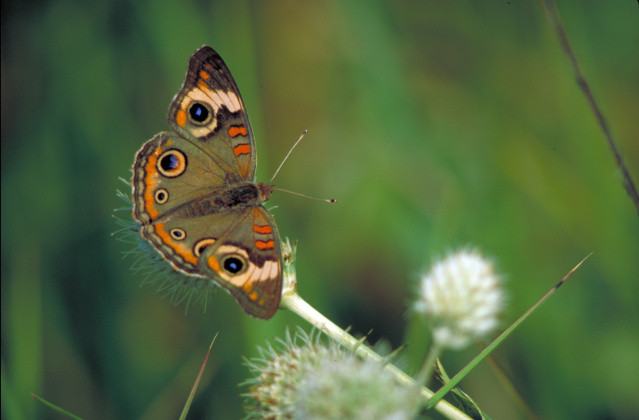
common buckeye butterfly on rattlesnake master